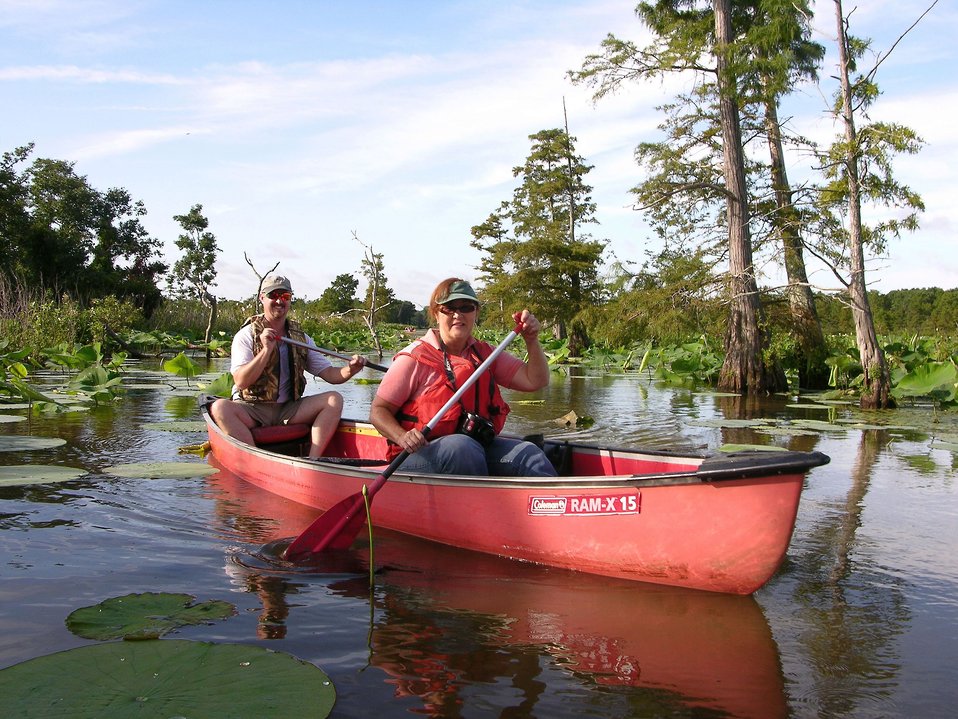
Mingo Refuge

Canoeists at Mingo National Wildlife Refuge, MO.